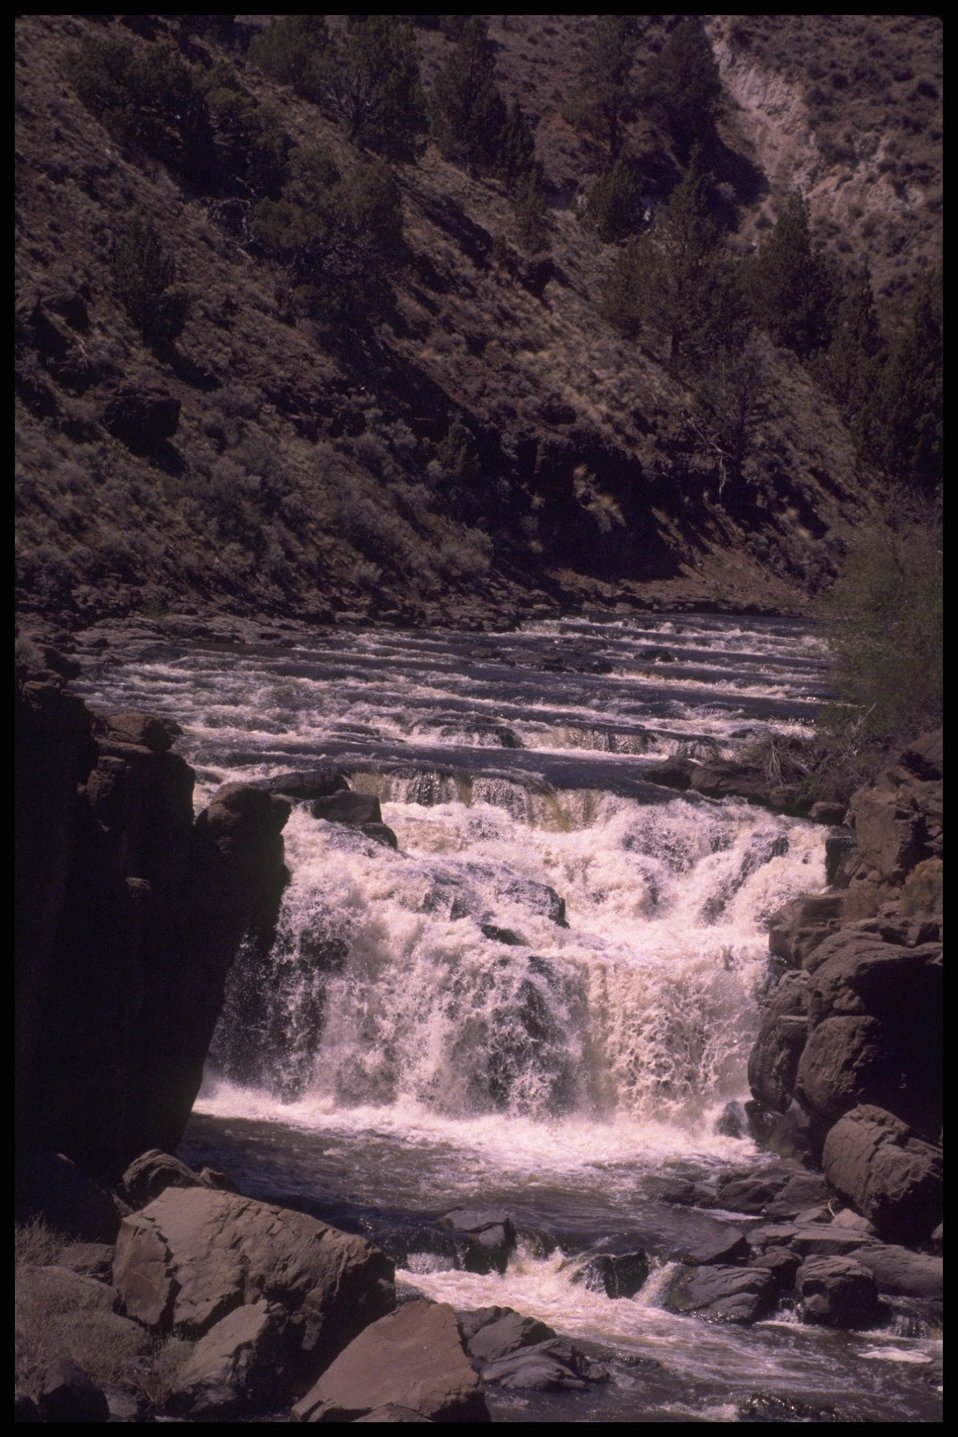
Deep Creek Falls, Lakeview District.